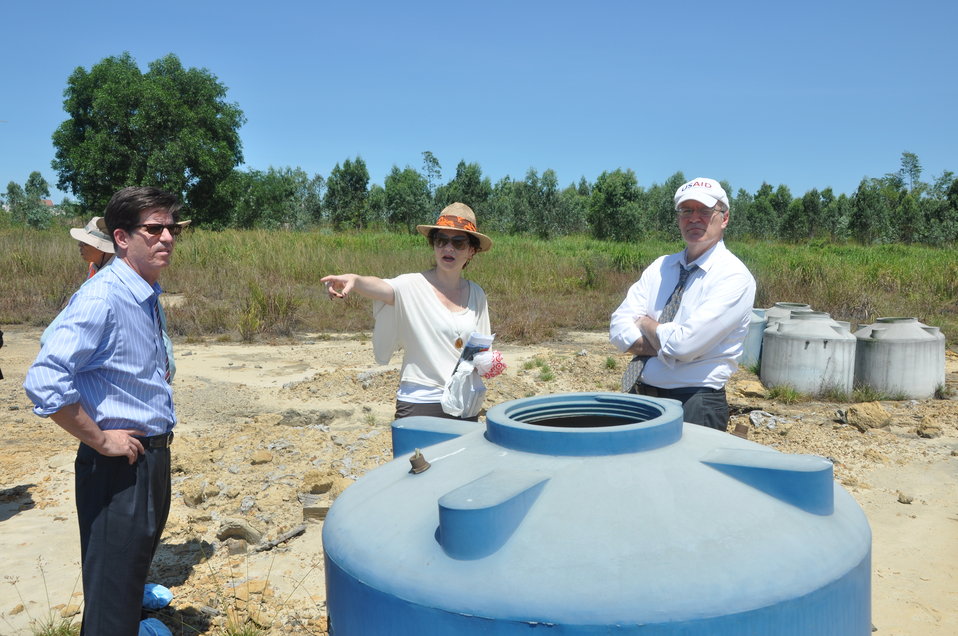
USAID Deputy Administrator Donald Steinberg and delegation visit Danang Airport

USAID Deputy Administrator Donald Steinberg Visits Vietnam